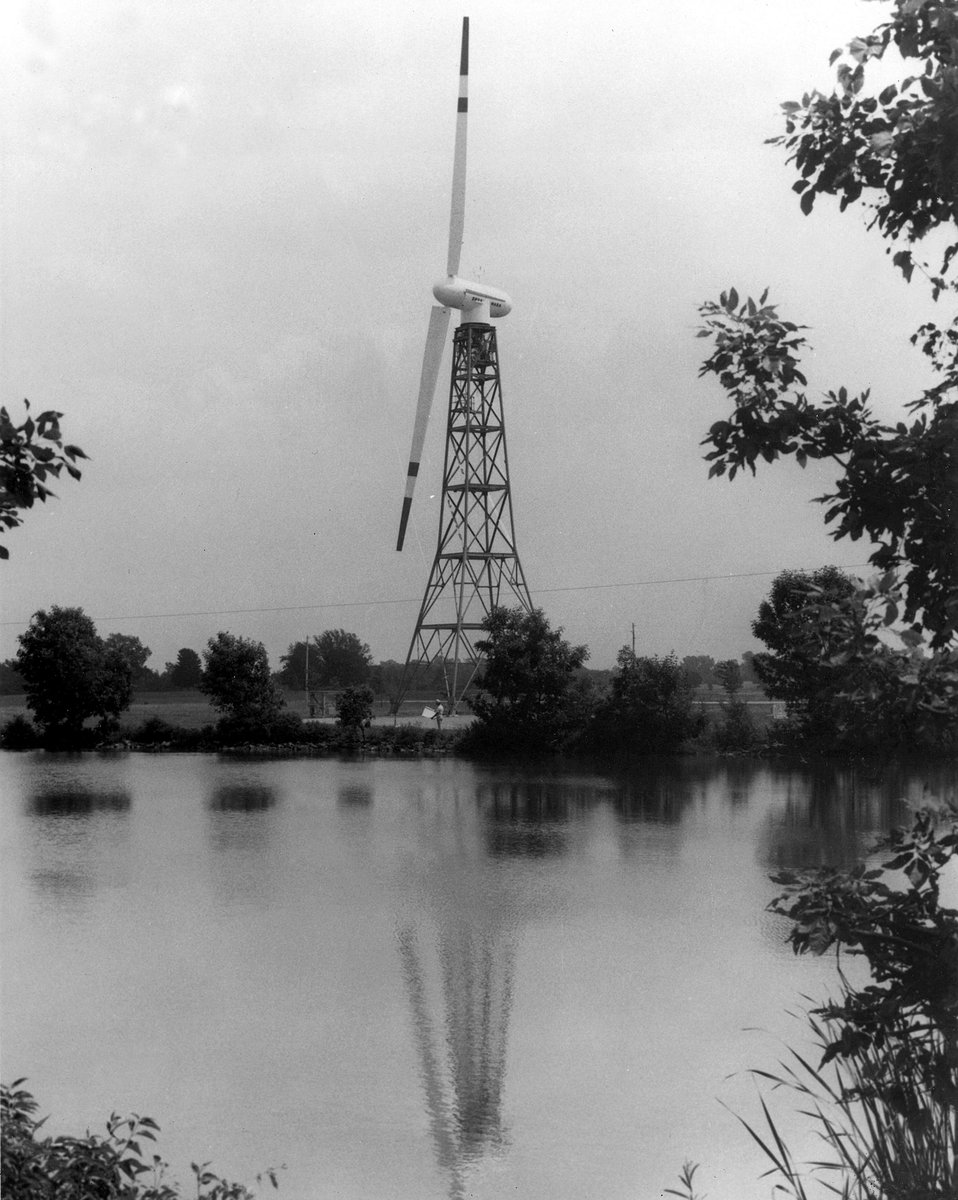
A 125-foot-tall windmill has been developed for the U.S. Department of Energy (DOE) by NASA's Lewis Research Center in Cleveland, Ohio. c. 1975